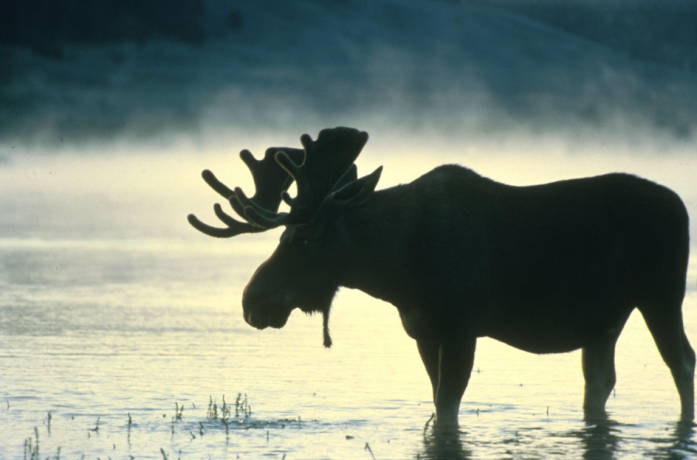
moose

Silvio E. Conte National Wiildlife Refuge